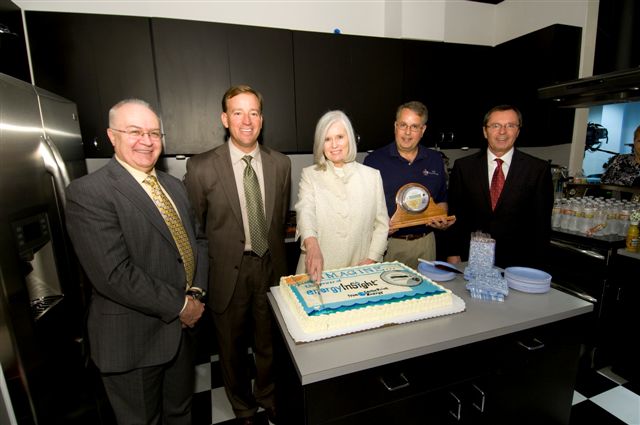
Ruth D’Iorio cutting million meter cake with Don Macdonald, Kenny Mercado, Craig Funni and Malcolm Unsworth